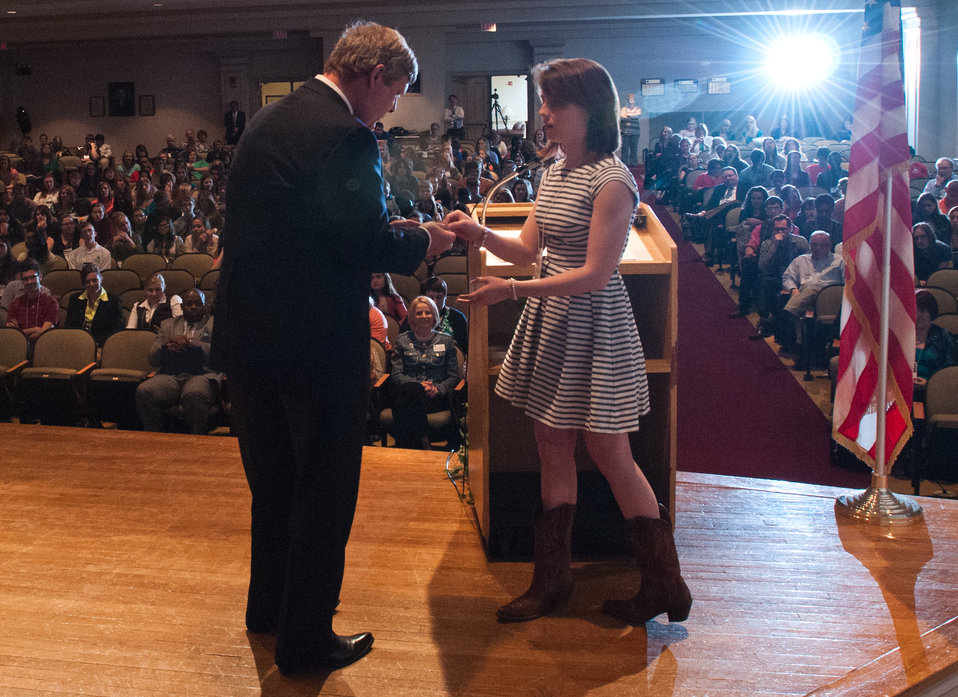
U.S. Department of Agriculture (USDA) Secretary Tom Vilsack is presented a 4-H pin by Laura Willis (NC) after his keynote remarks and question and answer session with approximately 300 youth members from across the nation, as well as U.S. Territories, during the 2013 National 4-H Conference, on Monday, April 8, 2013 in Chevy Chase, MD. Also speaking at the event is Agriculture Departmental Management Office of Advocacy and Outreach Director Carolyn Parker and National Institute of Food and Agriculture Director Dr. Sonny Ramaswamy. The youth delegates are in grades 10-12 (15-19 years old). The purpose of the conference is to 1) engage 4-H youth in personal development experiences that will increase knowledge, resources, and skills; 2) discuss topics affecting youth and 4-H programming nationwide; and 3) empower and mobilize 4-H youth to create positive social change in their communities in a meaningful and genuine way. The conference also reinforces the rich history of 4-H and its valuable tie to USDA, Cooperative Extension and the Land-Grant University System.USDA Photo by Lance Cheung.